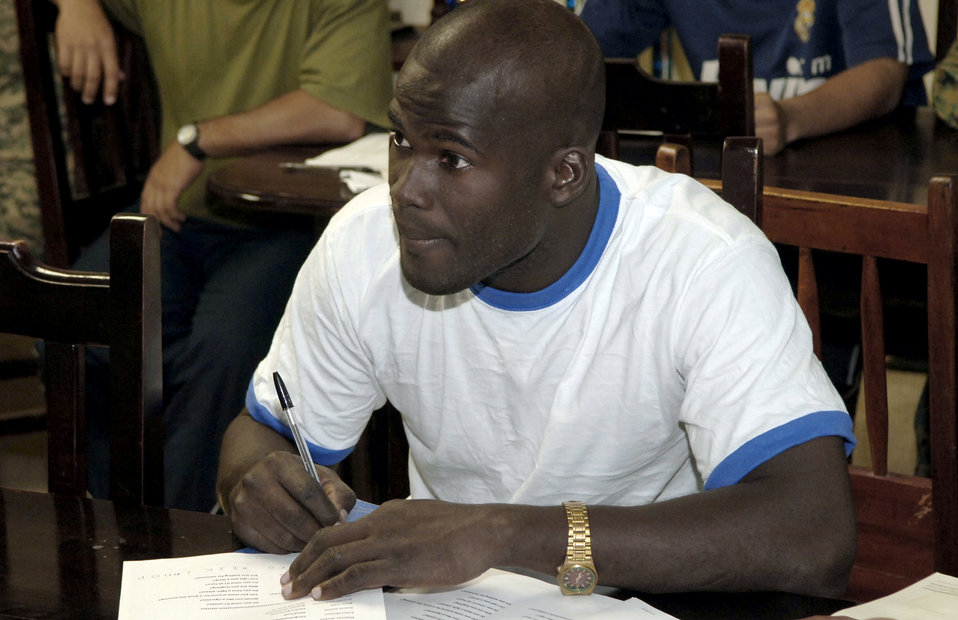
Security forces Airmen teach English to Panamanian hosts

A member of the Panamanian Frontier Police takes notes during an English class July 3, 2010, at the 1st Brigade Headquarters in Meteti, site of New Horizons Panama 2010, a U.S. Southern Command sponsored humanitarian mission designed to provide medical care and quality-of-life improvement projects for the people of Panama.